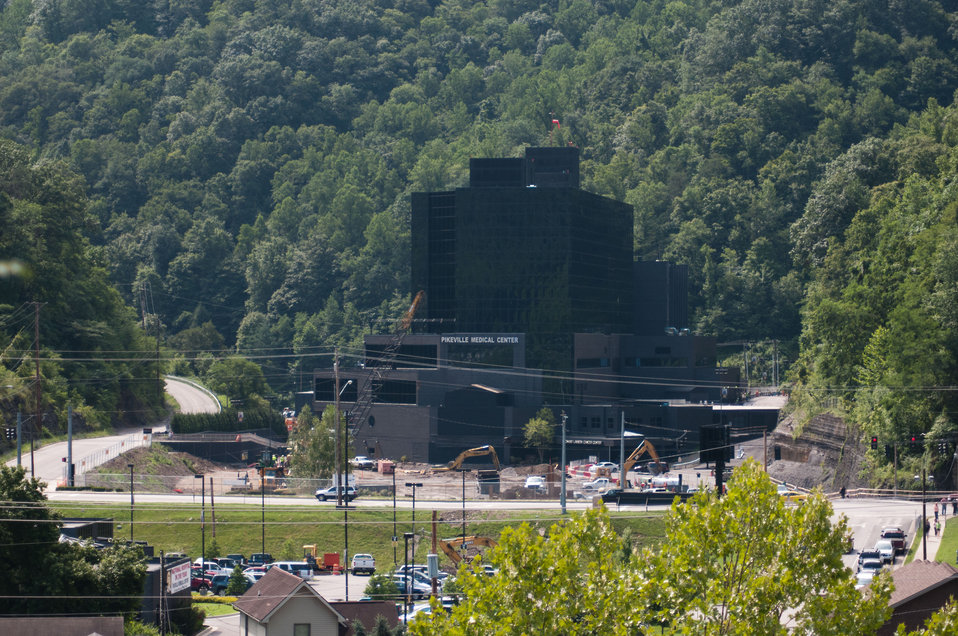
From across the horseshoe shaped town of Pikeville, KY, various buildings, parking lots, temporary walkways, and above ground construction of the Pikeville Medical Center (PMC) expansion project, on Tuesday, July 12, 2011, in Pikeville, KY. After months of infrastructure construction and rain delays, one of Kentucky’s largest American Recovery and Reinvestment Act (ARRA) projects is under way. The $44.6 million Community Facilities Loan will finance construction of a new medical office building and parking garage. The new medical office building will house outpatient surgery, endoscopy, surgical support and provide exam, waiting and office space for 23 primary and specialty care physicians. It also will contain a medical research center to support existing research – in conjunction with Pikeville College – on health disparities, genetic research related to the prevalence of cancer and other areas, including drug and treatment trials. The new parking garage with more than 1,000 spaces will be built adjacent to the new medical building, eliminating the need to shuttle patients back and forth from remote parking areas. The new garage will provide closer and easier proximity to medical and hospital services for all patients.
Wayne Rutherford, County Judge-Executive for Pike County, says funding from ARRA is a boon for his county because it will create jobs.

“This is great for Pike County’s economy. We know we have a great hospital, and with this support, it will be even better,” said Rutherford. “The unemployment rate here is above the state average and this will stimulate jobs. There will be construction, which means lots of jobs on the front end – and even more once it is built.”

Pike County is one of Kentucky’s persistent poverty counties and the current medical facility provides health care services for a rural population of more than 68,000. This project will create 1,430 direct and indirect construction jobs, in addition to 97 long-term jobs. It is scheduled to be completed in December 2012.

“This project is a prime example of the ARRA monies being utilized for much-needed health care facility expansion in an economically-depressed region of Eastern Kentucky and Appalachia,” said Tom Fern, State Director for Rural Development in Kentucky. “This hospital has received national recognition for its quality of care, and this money will allow them to expand and build upon their success and continue providing quality health care services to the region.”

PMC was named National Hospital of the Year by the American Alliance of Healthcare Providers in November 2009. The hospital was among 400 elite health care facilities to apply for this prestigious honor. To earn this recognition, PMC competed against more than 400 hospitals, including the Mayo Clinic, the John Hopkins Hospital, Cedar-Sinai Medical Center, the Cleveland Clinic, Duke University Medical Center and Vanderbilt University.

Pikeville City Manager Donovan Blackburn said the medical center is the largest employer in Pikeville and contributes nearly $2 million to the city through the payment of occupational taxes. He went on to say that Pikeville Medical’s success is also the city’s success because as other cities struggle with dwindling revenues, Pikeville has actually seen growth.

“This is a regional medical center that is very important to the city. Pikeville is a legal, financial and education hub for Eastern Kentucky and a gateway to rural communities in Virginia and West Virginia. There are half a million within a 50-mile radius – so it’s not just local people that depend on this facility,” said Blackburn. “From a regional standpoint it adds volume from a jobs standpoint. Everybody in this county knows someone or has family that works for Pikeville Medical Center.
“People in this area used to have to go out of the area for good jobs and quality medical services, but Pikeville Medical has changed that,” added Blackburn. 'And it has impact on other parts of the city’s economy – hotels, restaurants and retail. It increases the quality of life tenfold.”

The Recovery Act was designed to spend money gradually over time in order to sustain a true recovery – with peak spending to occur early this year. While the experts agree that ARRA is already responsible for creating or saving approximately two million jobs, about 75 percent of recipients that reported on their Recover Act spending indicated their projects are less than half complete, meaning there is even more job impact from those dollars to come.